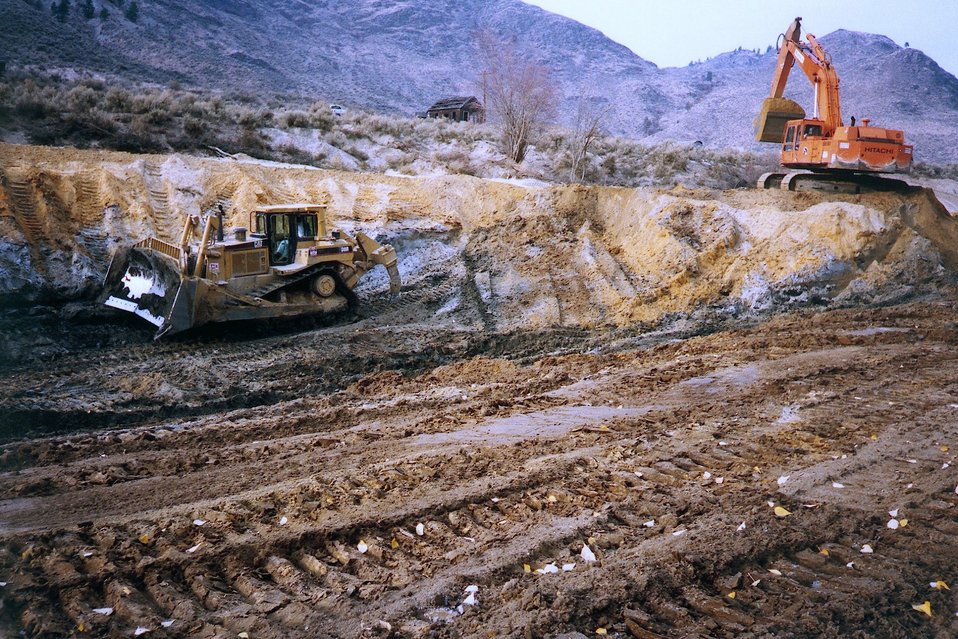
AML. Kaaba-Texas Mine In buried slough-onput. Note oxidized and reduced tailings contrast.